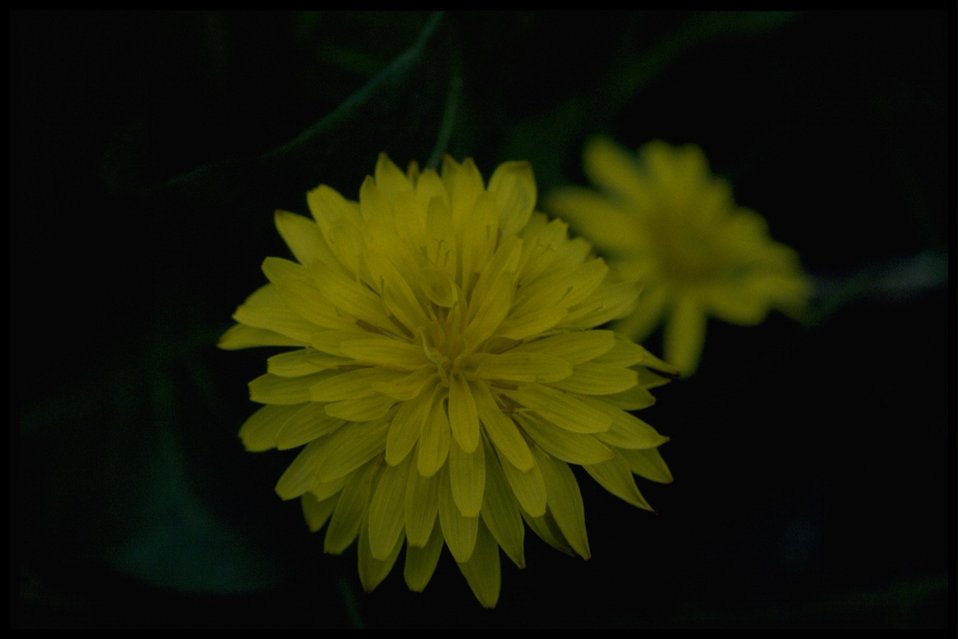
Closeup shot of prairie dandelion (Microseris troximoides).